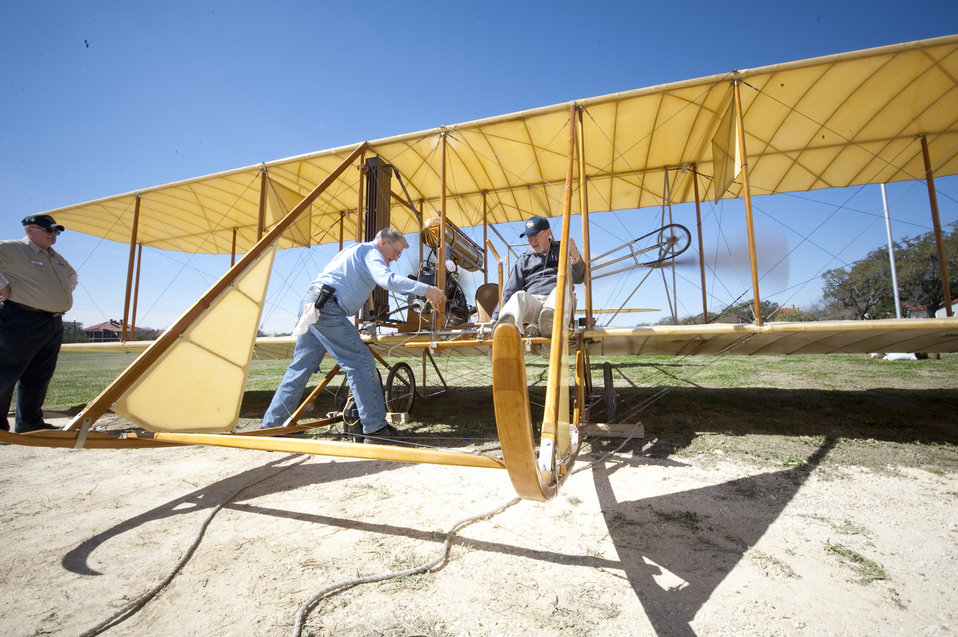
Wright